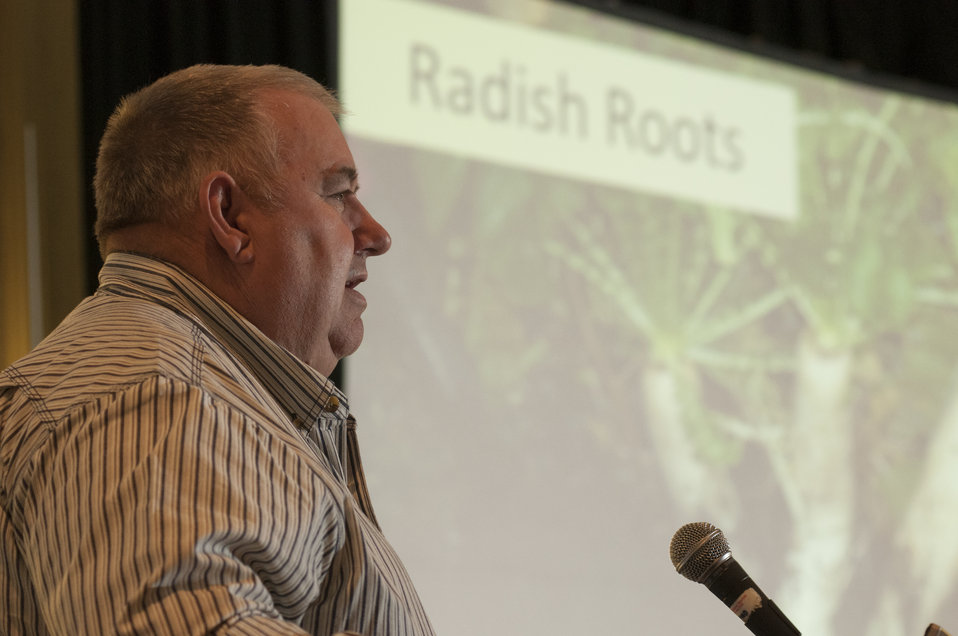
Brandt Farms Conservation Farmer David Brandt, of Carroll, OH speaks about the business benefits of no-till soil nutrient management, and shows a photo of the type of radish plant he uses to naturally loosen his fields at least 15' deep, during the U.S. Department of Agriculture (USDA) 2013 Agricultural Outlook Forum, held at the Crystal Gateway Marriott Hotel in Arlington, VA on Friday, Feb. 22, 2013. Agriculture Secretary Thomas Vilsack mentions, in his opening address at the forum, how Mr. Brandt’s multi-cropping/double-cropping practices that has yielded increased soil matter, saves about $100 per acre in nitrogen, increased corn yield by 7-10 bushels per acre, and his soybean yield 8 percent. This exemplified what Secretary Vilsack said is a possible strategy for managing risk. This breakout session focused on Reducing Risks by Improving Soil Health examined the indicators of soil health, to reduce chemical inputs and apply the right techniques for sustainable production and other benefits. Soil health is defined as the capacity of the soil to function as a living ecosystem that sustains plant, animal, and human health with limited human intervention. Brandt farms 1,200 acres of continuous no-till corn, soybeans and wheat, using hairy vetch, oilseed radish, cereal rye, and Austrian winter peas as cover crops. Mr. Brandt is the modern farmer that uses education, scientific study, and commonsense observations to understand that healthy soils are the key to a productive farm.
His presentation is available at www.usda.gov/oce/forum/presentations/Brandt.pptx